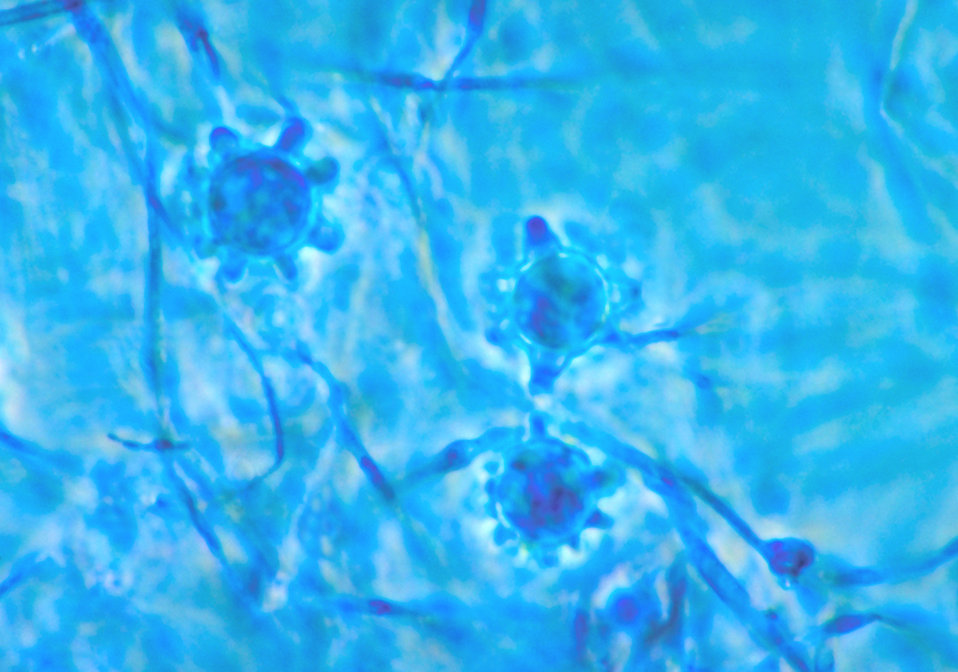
This photomicrograph reveals a number of macroconidia of the fungus Histoplasma capsulatum.